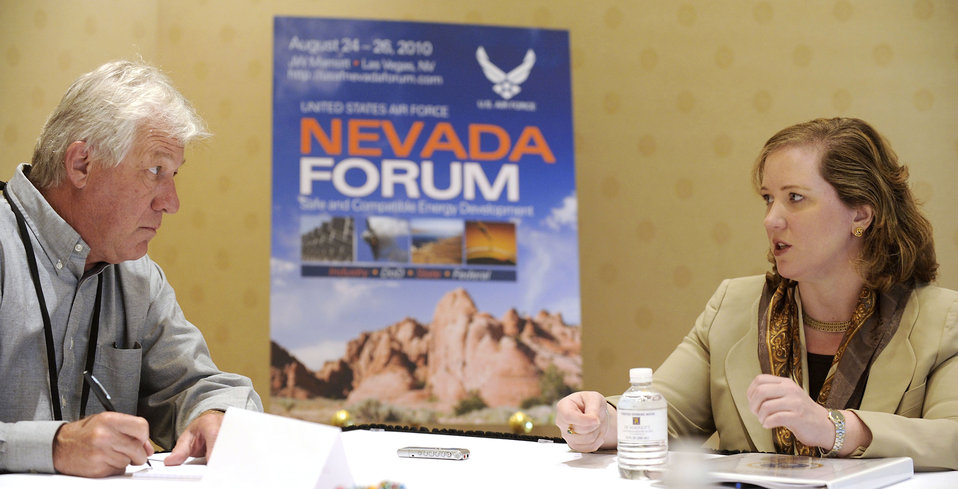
Nevada Forum

Undersecretary of the Air Force Erin C. Conaton answers a question for Keith Rogers, a reporter with the Las Vegas Review Journal, during a media roundtable following the kick-off of the Nevada Energy Forum, an Air Force-hosted three-day brainstorming to find ways for the service to reduce fossil fuels usage Aug. 24, 2010, in Las Vegas.